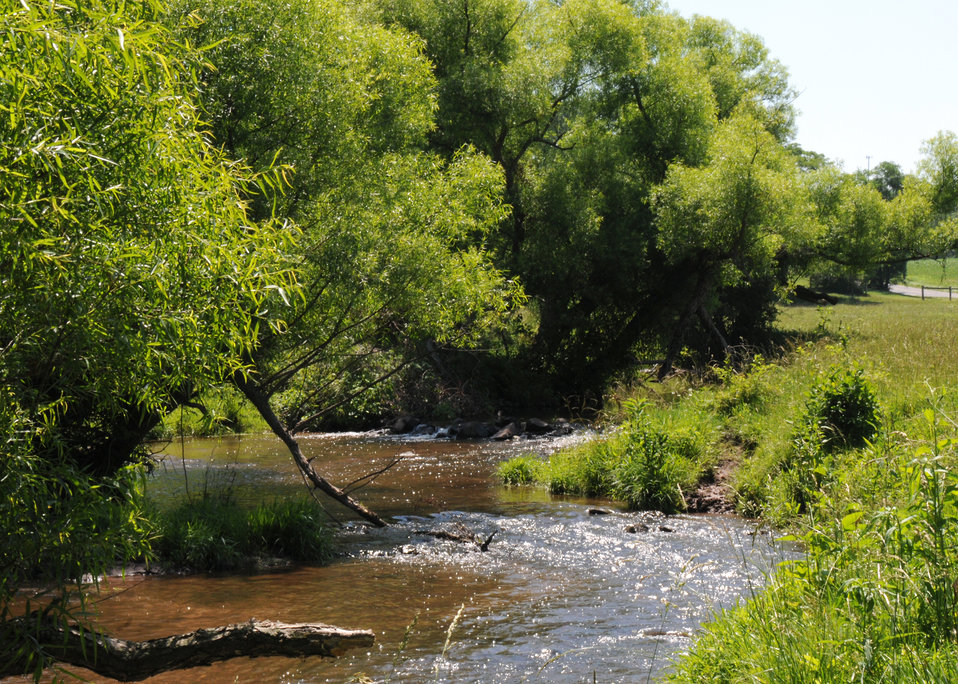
The U.S. Department of Agriculture selected three watershed areas, Conewago Creek in Pennsylvania (pictured), Smith Creek in Virginia, and Upper Chester River in Maryland as part of the Chesapeake Showcase Watershed Project. The watershed project will utilize the collective energies of Federal, State, and local partners to help landowners and communities use their land in sustainable ways that do not harm water quality. If these watersheds are successfully restored they may become models for the six states involved in restoring the Chesapeake Bay. Conewago Creek watershed covers 33,606 acres in Pennsylvania, 44% percent is in Dauphin County, 37% percent in Lebanon County, and 18% in Lancaster County. Majority of watershed is farmland and consists of a variety of crops, pasture, and forest. USDA photo 10di1410-168.